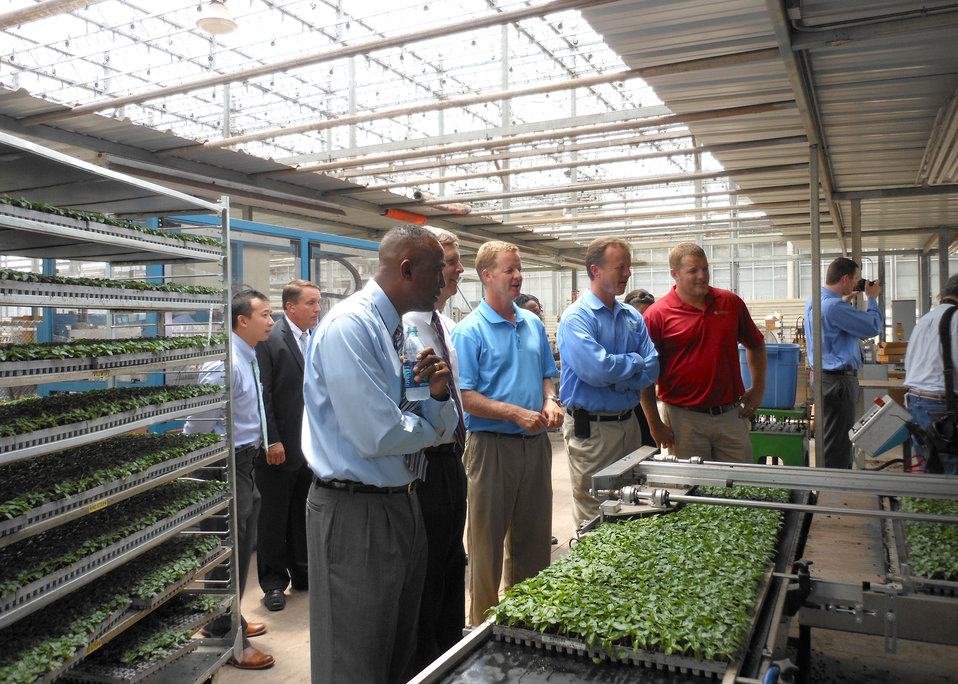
Agriculture Secretary Tom Vilsack looks over the operation of the TTA PackPlanter wireless at Metrolina Greenhouses in Huntersville, NC on Monday, June 25, 2012. Metrolina Greenhouses is a family-owned, wholesale plant and services company that started business in April 1972. It is the largest single-site heated greenhouse in the US at 162 acres under roof and approximately 30 acres of outdoor growing space. (L to R Agriculture Rural Development North Carolina State Director Randall Gore, Agriculture Secretary Tom Vilsack, Art Vanwingerden, Abe Vanwingerden, and Tom Vanwingerden)